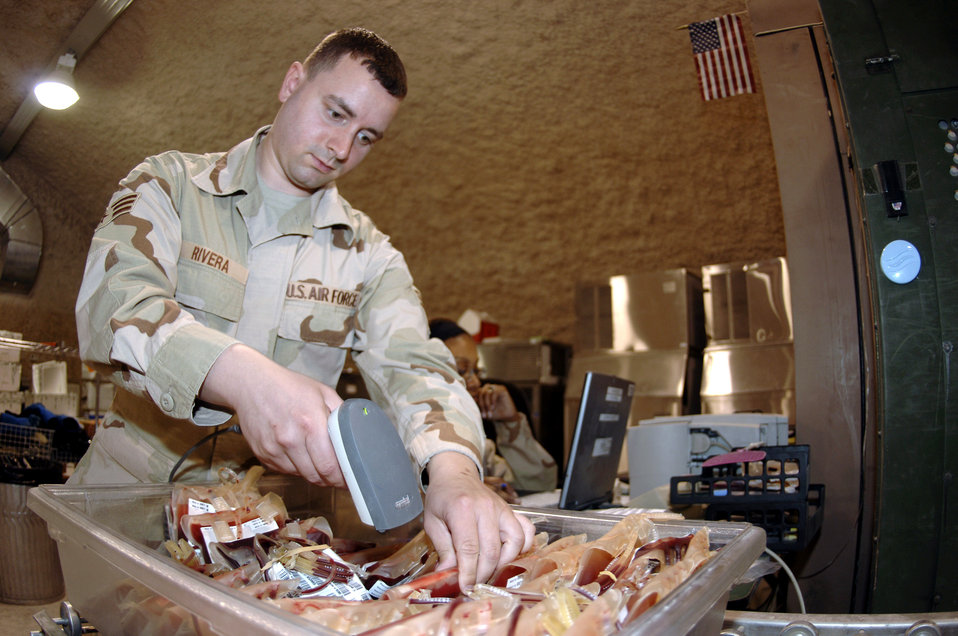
Expeditionary wing supports war efforts in many ways

Senior Airman Samuel Rivera scans blood into a database which designates which forward blood supply unit in the area of responsibility will receive it. Airman Rivera is an administration technician assigned to the 379th Expeditionary Medical Group Blood Transshipment Center in Southwest Asia.